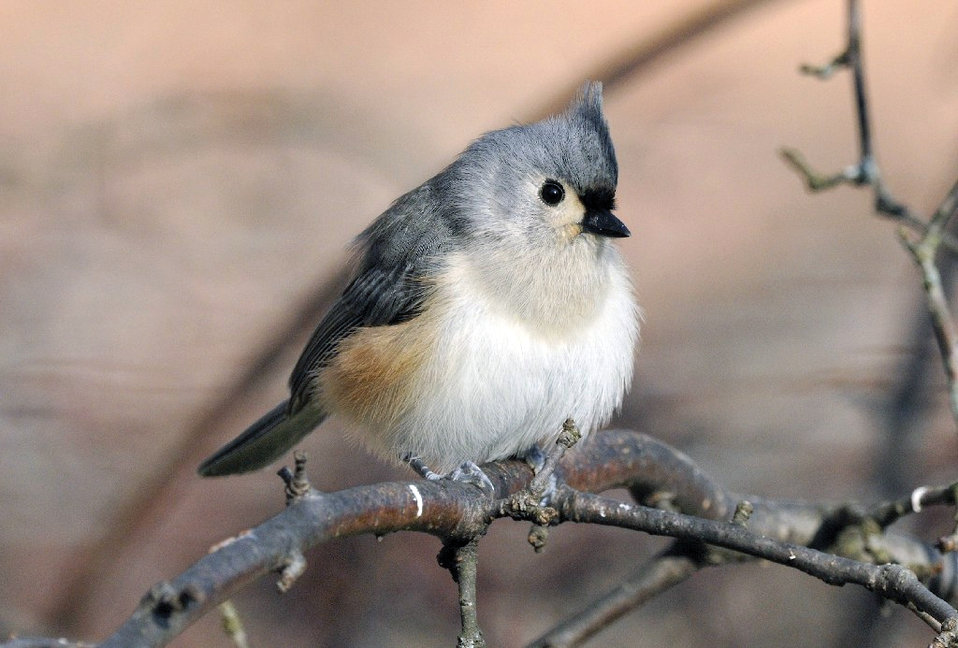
Photo of the Week - Tufted Titmouse (MA)

Photo of the Week - 12/12/11

Tufted titmouse photographed in Hadley, MA.